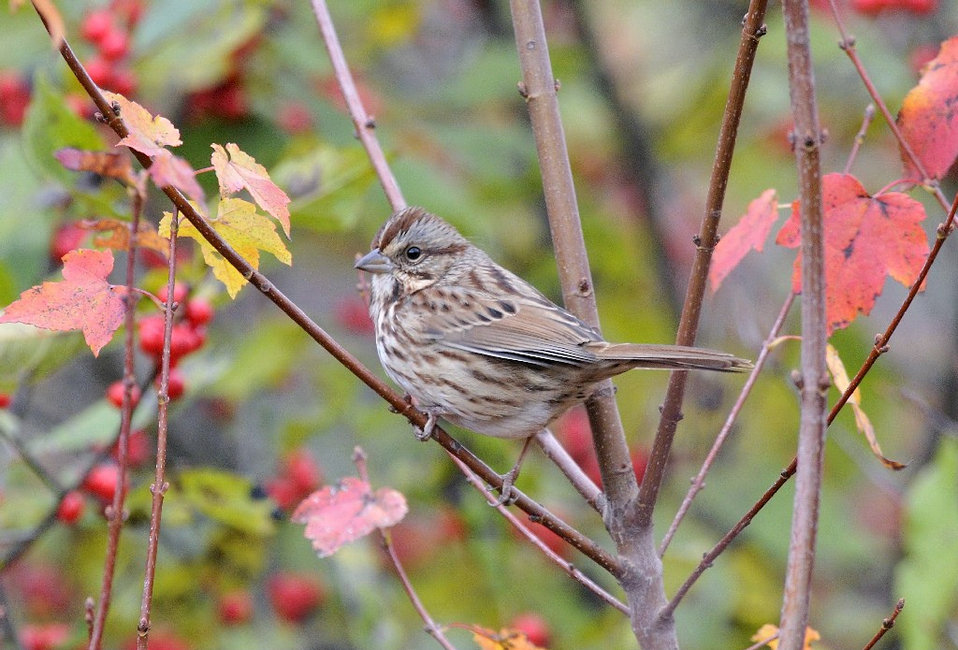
Photo of the Week - Song sparrow (MA)

Photo of the Week - 11/7/2011

Song sparrow photographed at the Quabbin Reservoir near South Athol, MA.